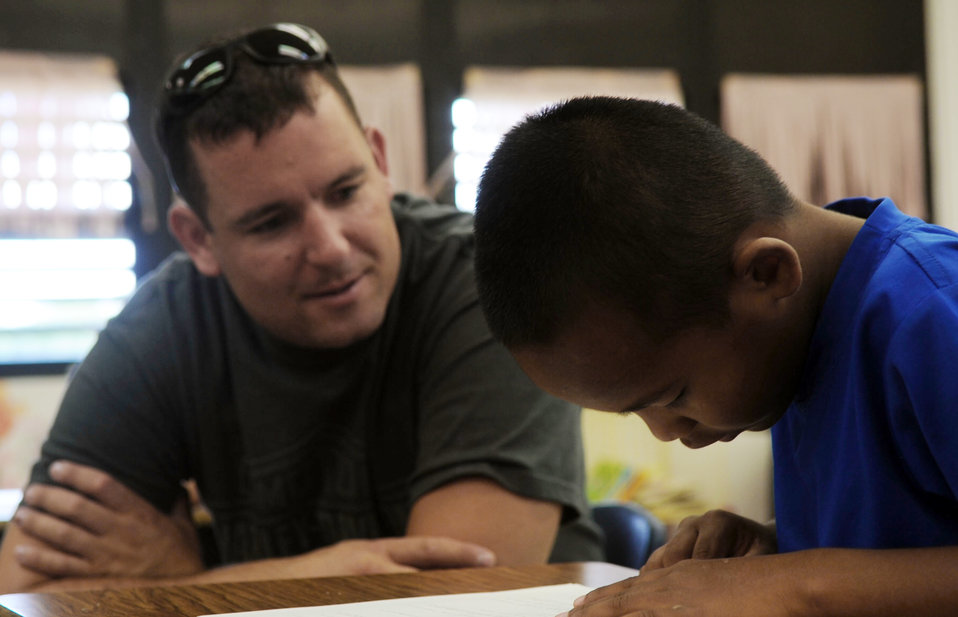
Airmen spend time with students during deployment

Tech. Sgt. Sean Burger reads to second graders June 19 at Machananao Elementary School in Agana, Guam. The Weippe, Idaho, native is deployed to Andersen Air Force Base, Guam, from Elmendorf AFB, Alaska, to support U.S. Pacific Command's continuous bomber presence in the Asia-Pacific Region. Sergeant Burger is a 525th Expeditionary Aircraft Maintenance Unit F-22 Raptor low observables aircraft structural maintenance craftsman.